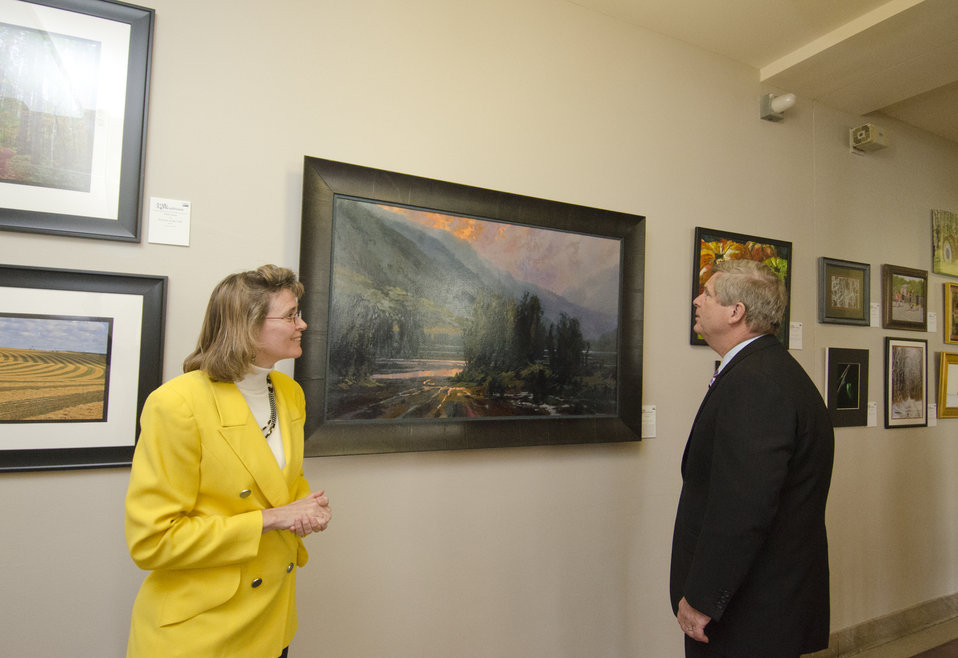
U.S. Department of Agriculture (USDA) Office of Communications (OC) Exhibits/Events Coordination, Editorial and Brand Review Division Director and organizer of the art show Carolyn O'Conner discusses the submitted artwork with Agriculture Secretary Tom Vilsack during his visit to the gallery of winning entries and some of the employee artists from the inaugural competition for Art and Agriculture, Thursday, May 31, 2012, in the South Building, Washington, D.C. USDA full-time and part-time employees submitted art based on ten agricultural themes. The event was part of USDA's 150th Anniversary celebration and the winning artwork is on display from May 15 through December 31, 2012. Artistic expression is a creative outlet that is vital for an individual to grow and develop in their environment.